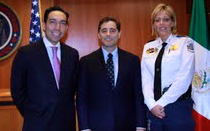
Announcement of Bilateral Initiative to Combat Stolen Mobile Devices 11.13.2012

Chairman Genachowski, Under-Secretary of Communications for Mexico Hector Olavarria Tapia, & DC's Metropolitan Police Department Chief of Police Cathy Lanier